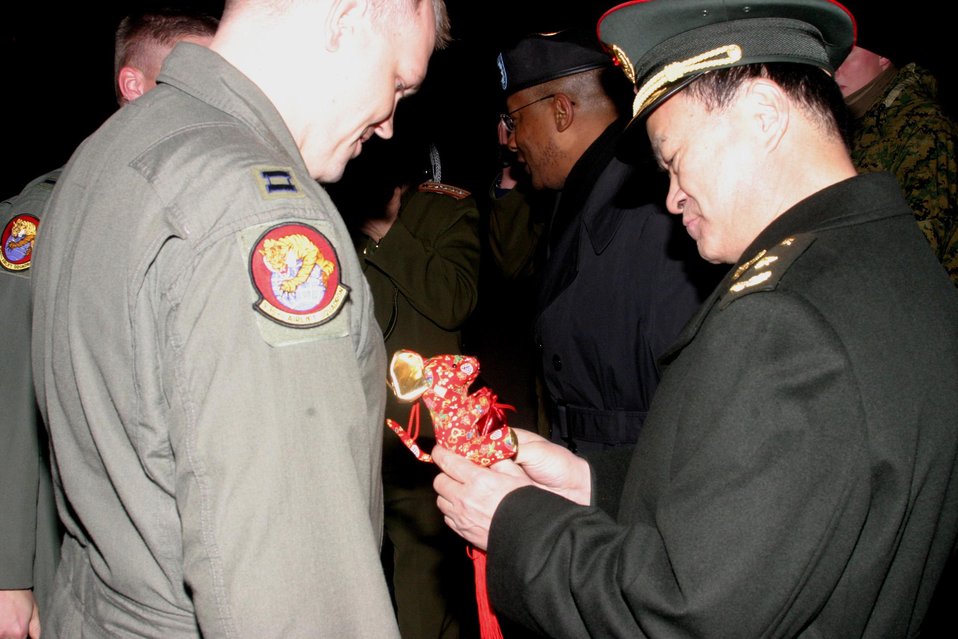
Air Force delivers humanitarian supplies to China

U.S. Air Force Capt. Dave Ericson receives a Chinese New Year's gift symbolizing the Chinese ?Year of the Rat? from Major General Lihua Qian of the People?s Liberation Army. Captain Ericson commanded the 15th Airlift Wing C-17 from Hickam Air Force Base, Hawaii, which delivered humanitarian supplies to the Shanghai International Airport. Thirteenth Air Force's 613th Air and Space Operations Center Air Mobility Divsion at Hickam AFB coordinated the delivery of 225,890 pounds of relief supplies to Shanghai within 18 hours of Secretary of Defense approval. Recently, 19 Chinese provinces experienced the most severe winter storms in 50 years, imposing severe hardships on millions of Chinese citizens.